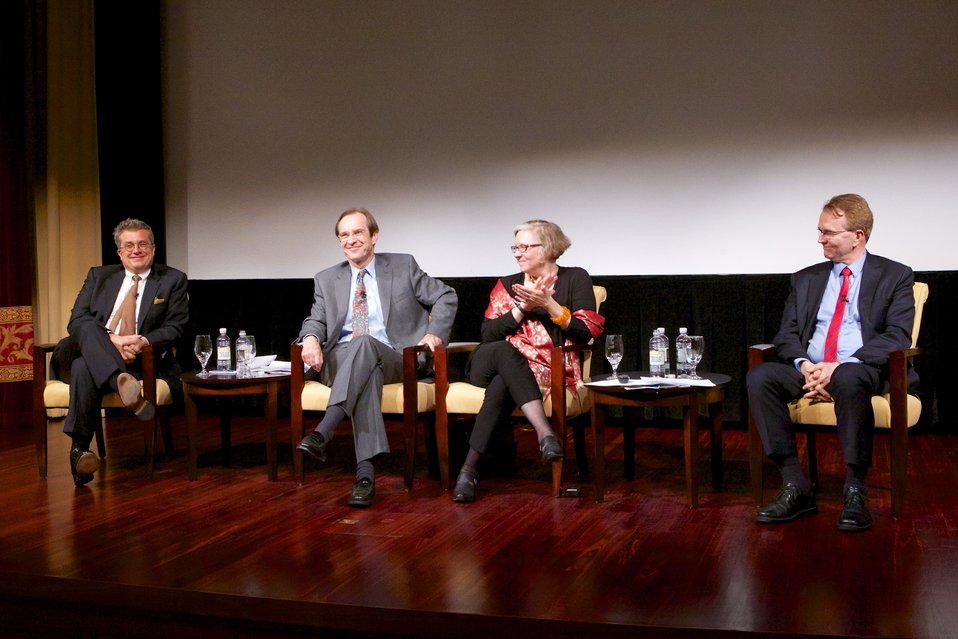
Jazz Diplomacy: Sending America's Music to the World